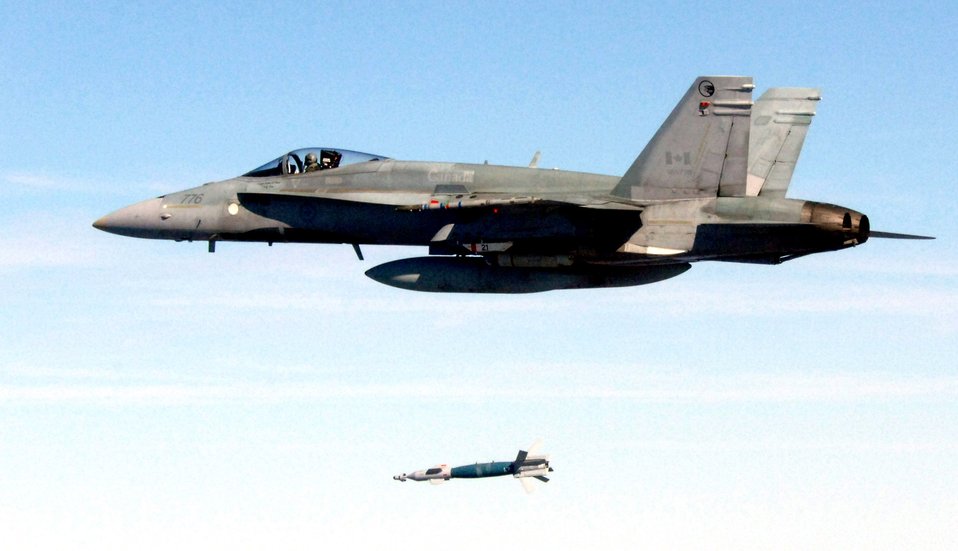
Northwest Florida site of weapons system evaluation

A Canadian CF-18 Hornet from the 409th Tactical Fighter Squadron launches a laser-guided bomb Dec. 5 during one of the unit's weapon systems evaluation program scenarios. The Canadian aircrew launched 12 LGBs during their week at Eglin Air Force Base, Fla.